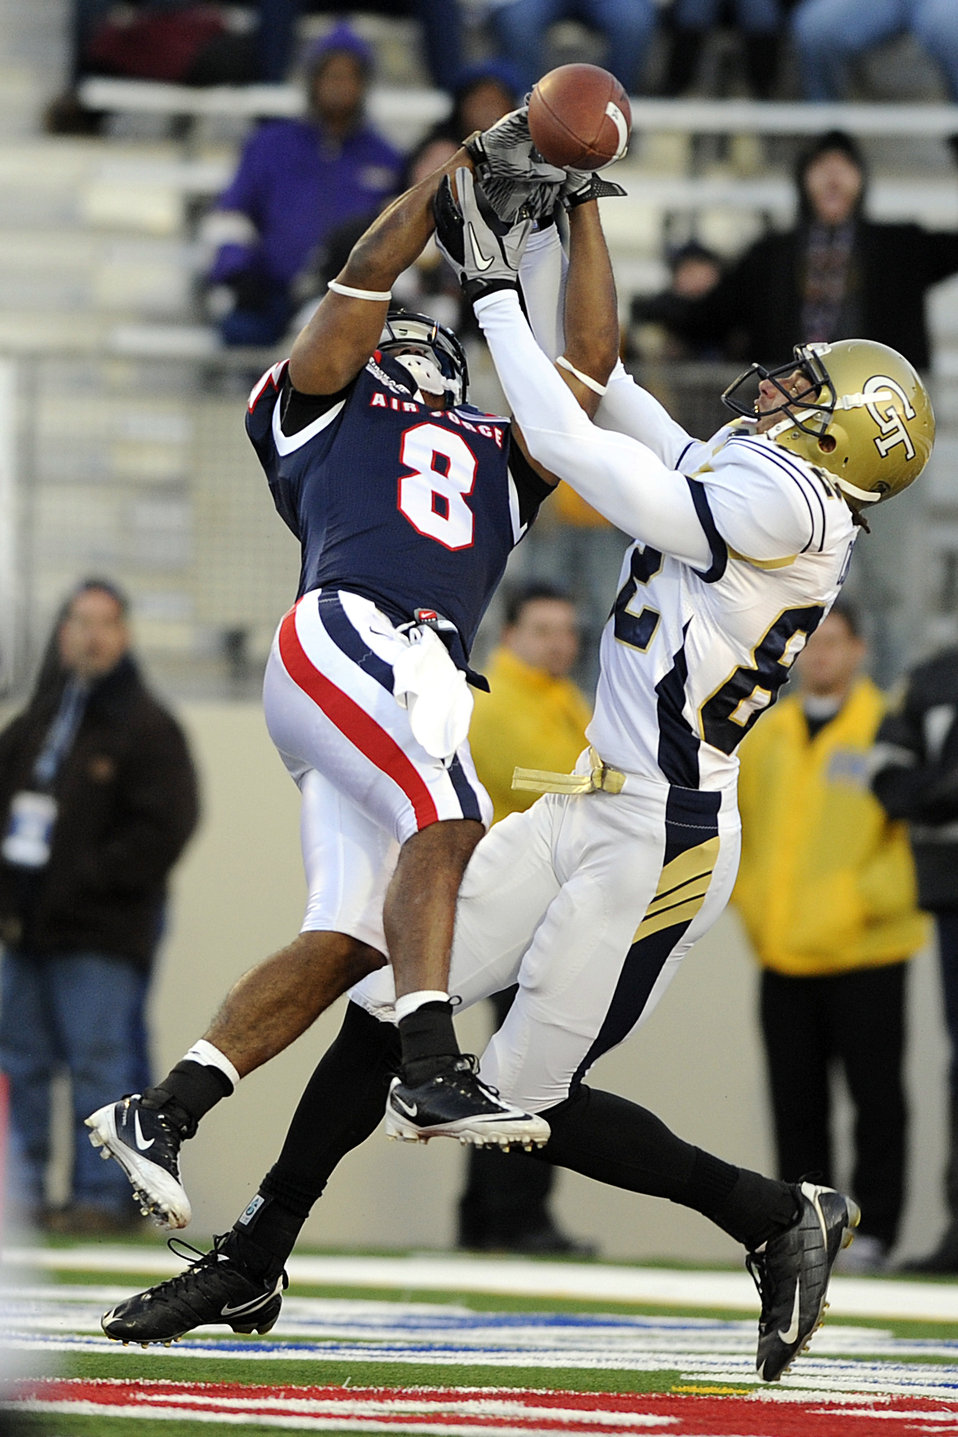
Falcons ground Yellow Jackets

Air Force Academy senior Reggie Rembert breaks up a pass intended for Georgia Tech's Kevin Cone during the Advocare V100 Independence Bowl Dec. 27, 2010, in Shreveport, La. The Falcons defeated the Yellow Jackets 14-7.